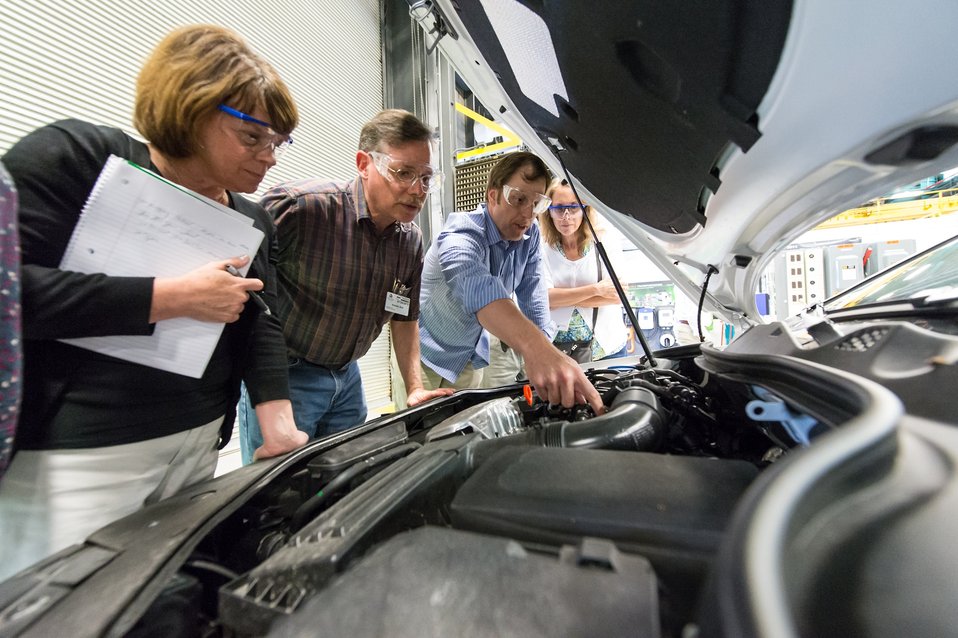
PARTICIPANTS IN THE 2013 ARGONNE SUSTAINABILITY TEACHERS WORKSHOP.

Workshop participants had an opportunity to explore Argonne vast array of green transportation and energy efficiency research.